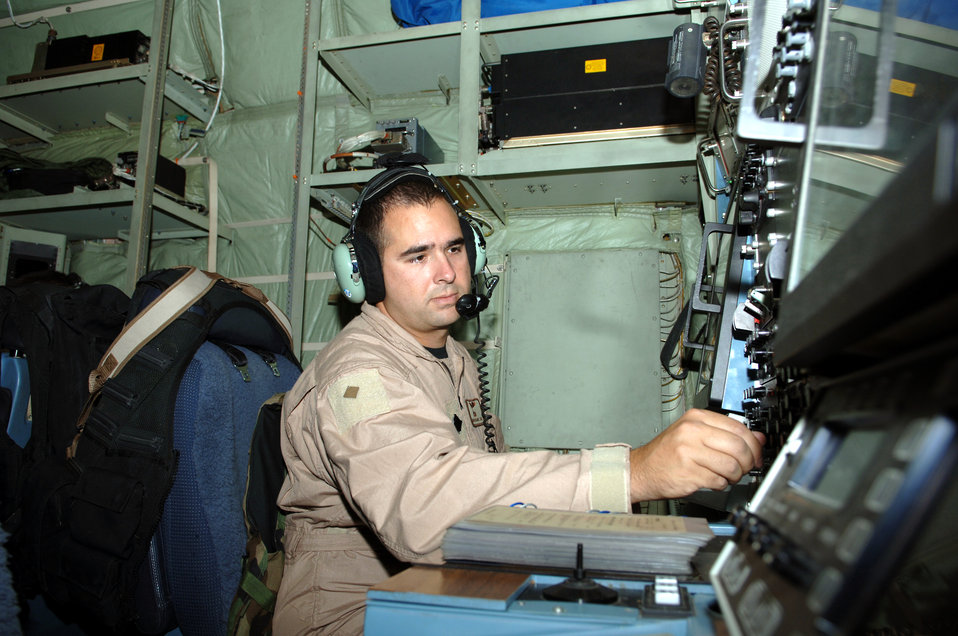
Airpower key to successful voting

BAGRAM AIR BASE, Afghanistan -- Tech. Sgt. David Ortegon conducts preflight checks on an EC-130H Compass Call aircraft before takeoff here to support Afghanistan's National Assembly elections Sept. 18. The aircraft, along with A-10 Thunderbolt IIs and U.S. Navy EA-6B Prowlers, have stepped up efforts throughout Afghanistan to deter enemy aggression and help ensure voter safety. Sergeant Ortegon is deployed from Davis-Monthan Air Force Base, Ariz.